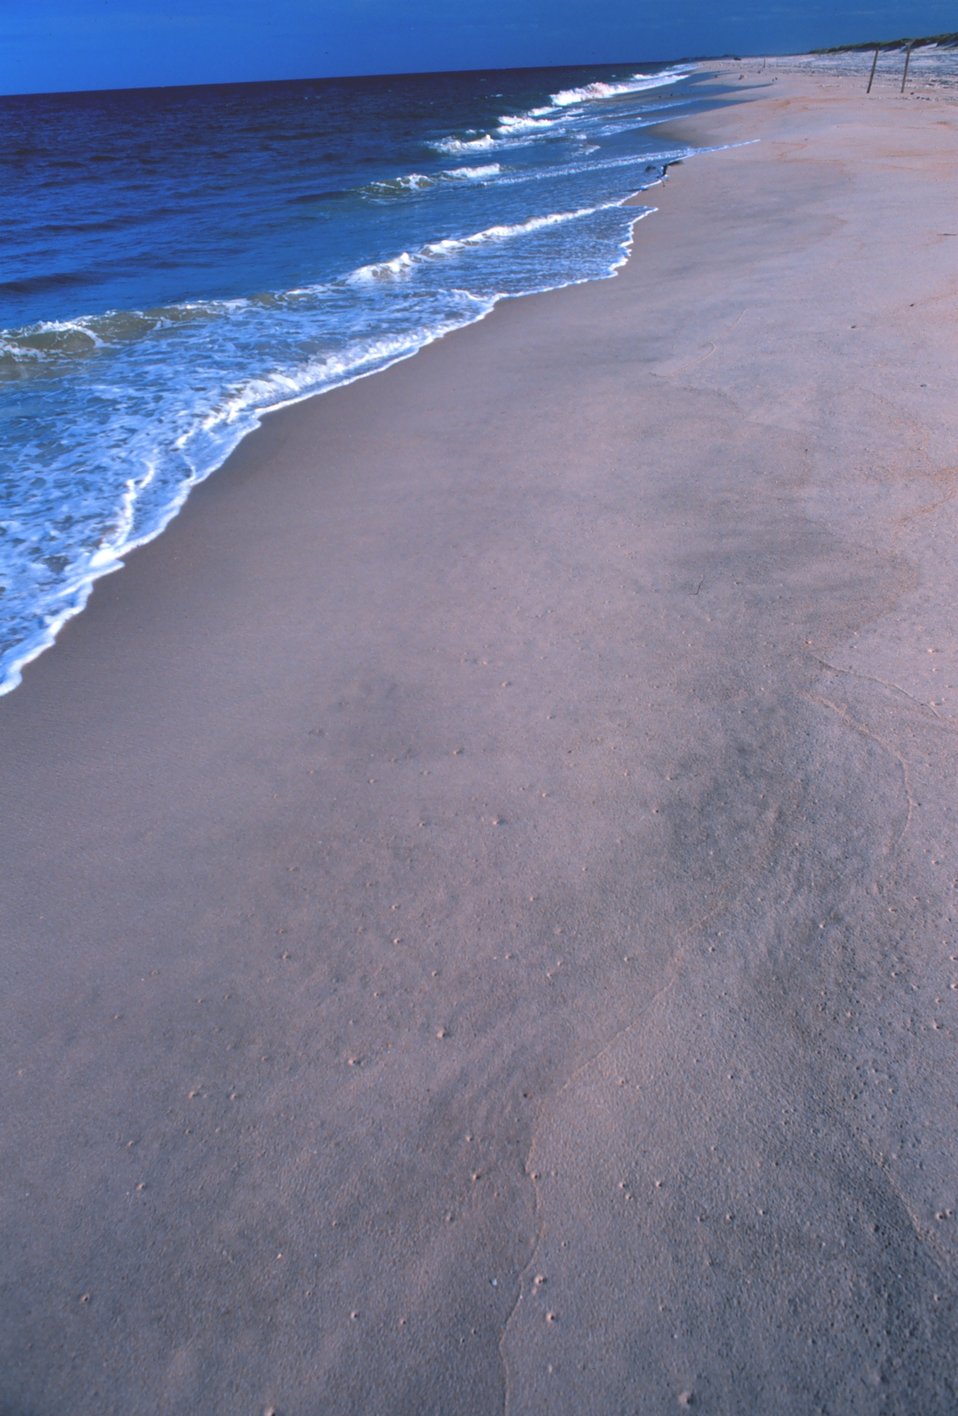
Looking south at the edge of sea and shore at Delaware Seashore State Park